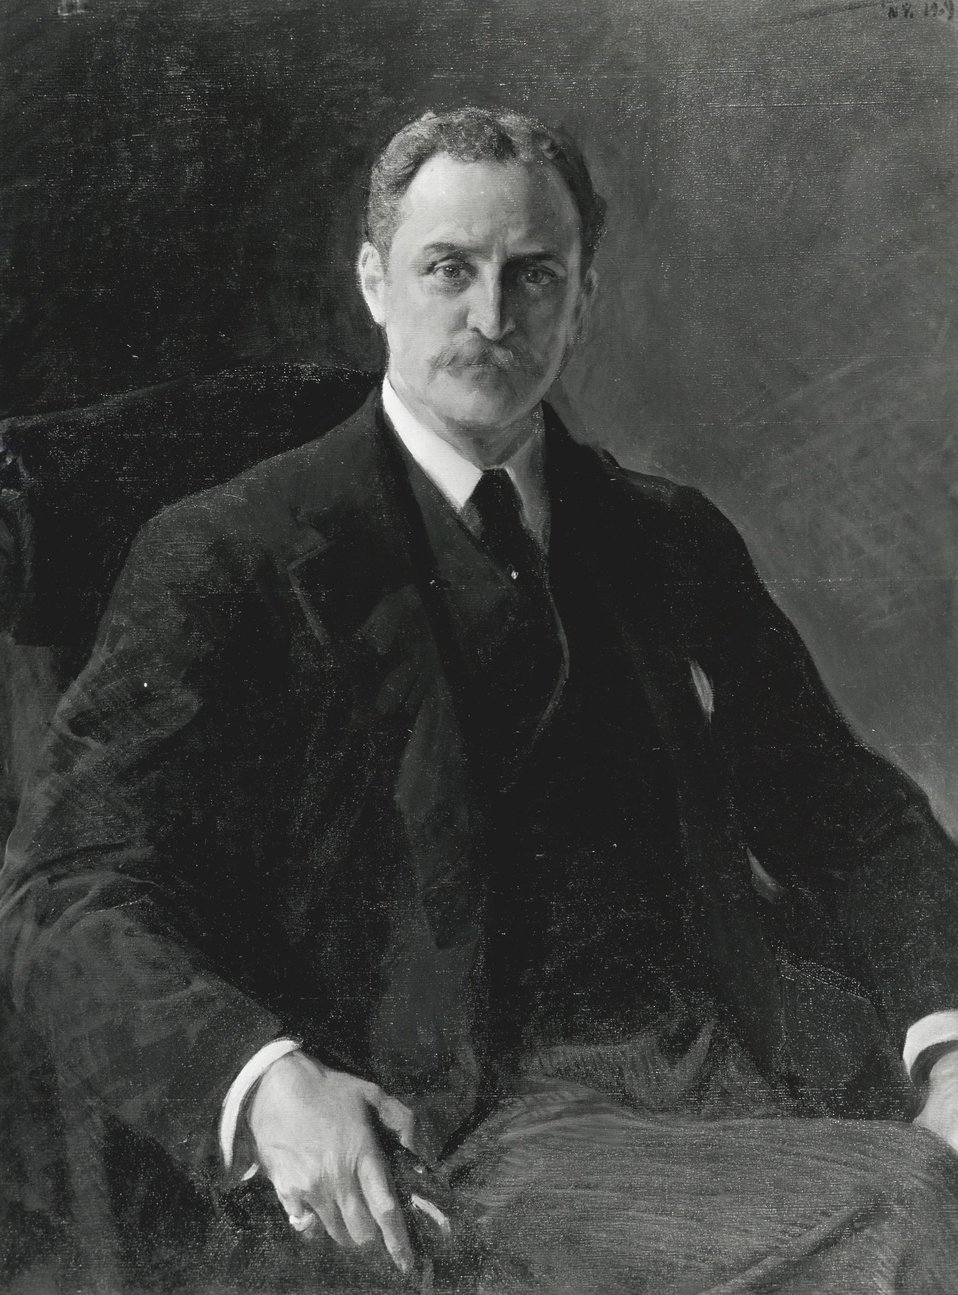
Robert Bacon, U.S. Secretary of State, January 27, 1909 to March 5, 1909